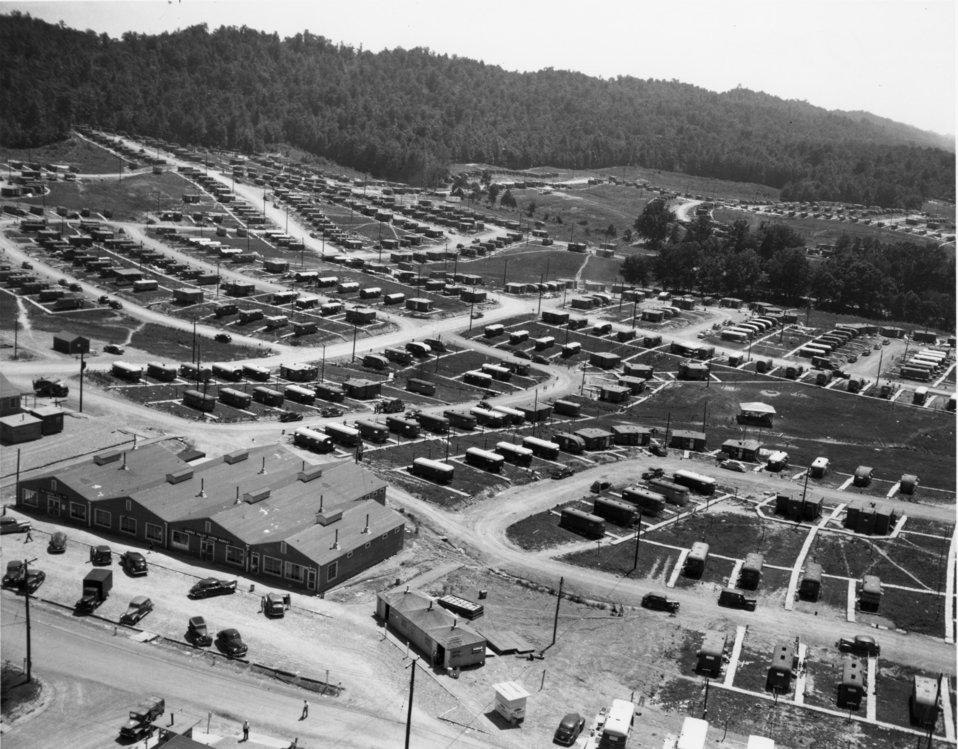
Aerial of Oak Ridge